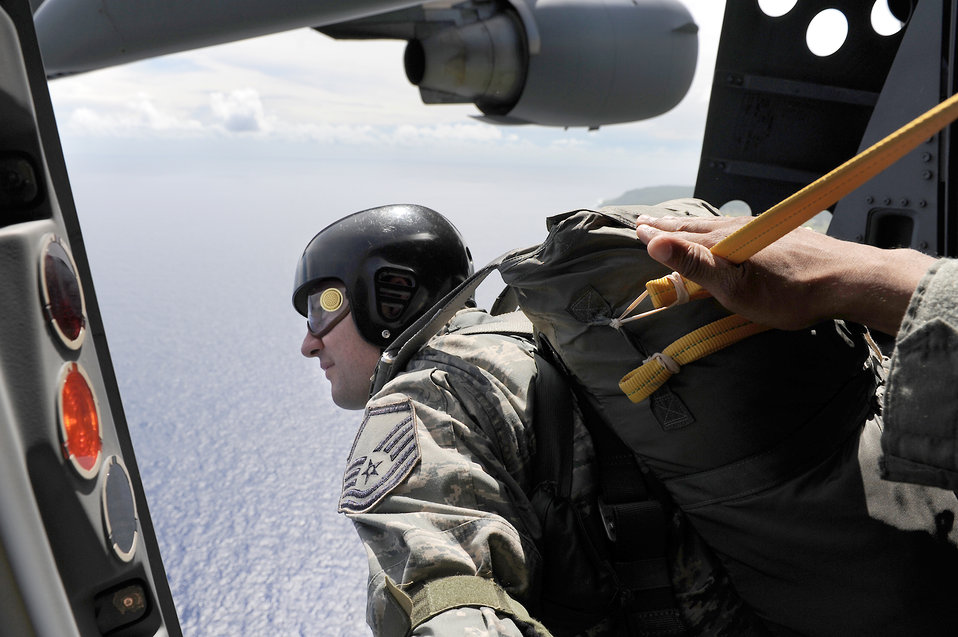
Static-line jumps over Guam

Master Sgt. Justin Papalia surveys the drop zone during proficiency training Jan. 13, 2011, at Andersen Air Force Base, Guam. An aircrew from the 535th Airlift Squadron in Hawaii provided four static-line jumps for Andersen’s 36th Contingency Response Group. Sergeant Papalia is a jumpmaster with the 36th CRG.